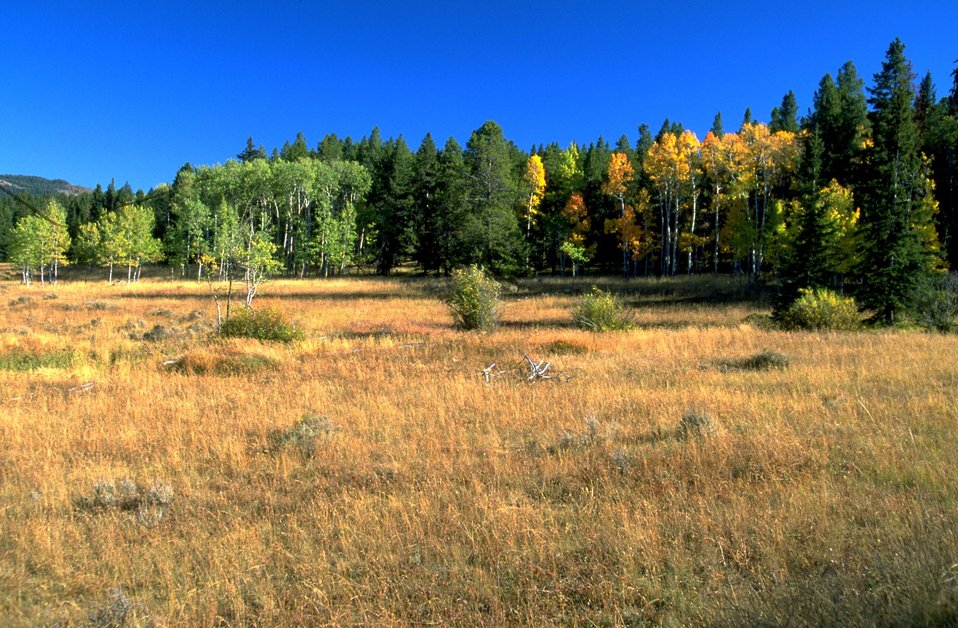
Grassy meadow with trees turning to autumn colors in the background